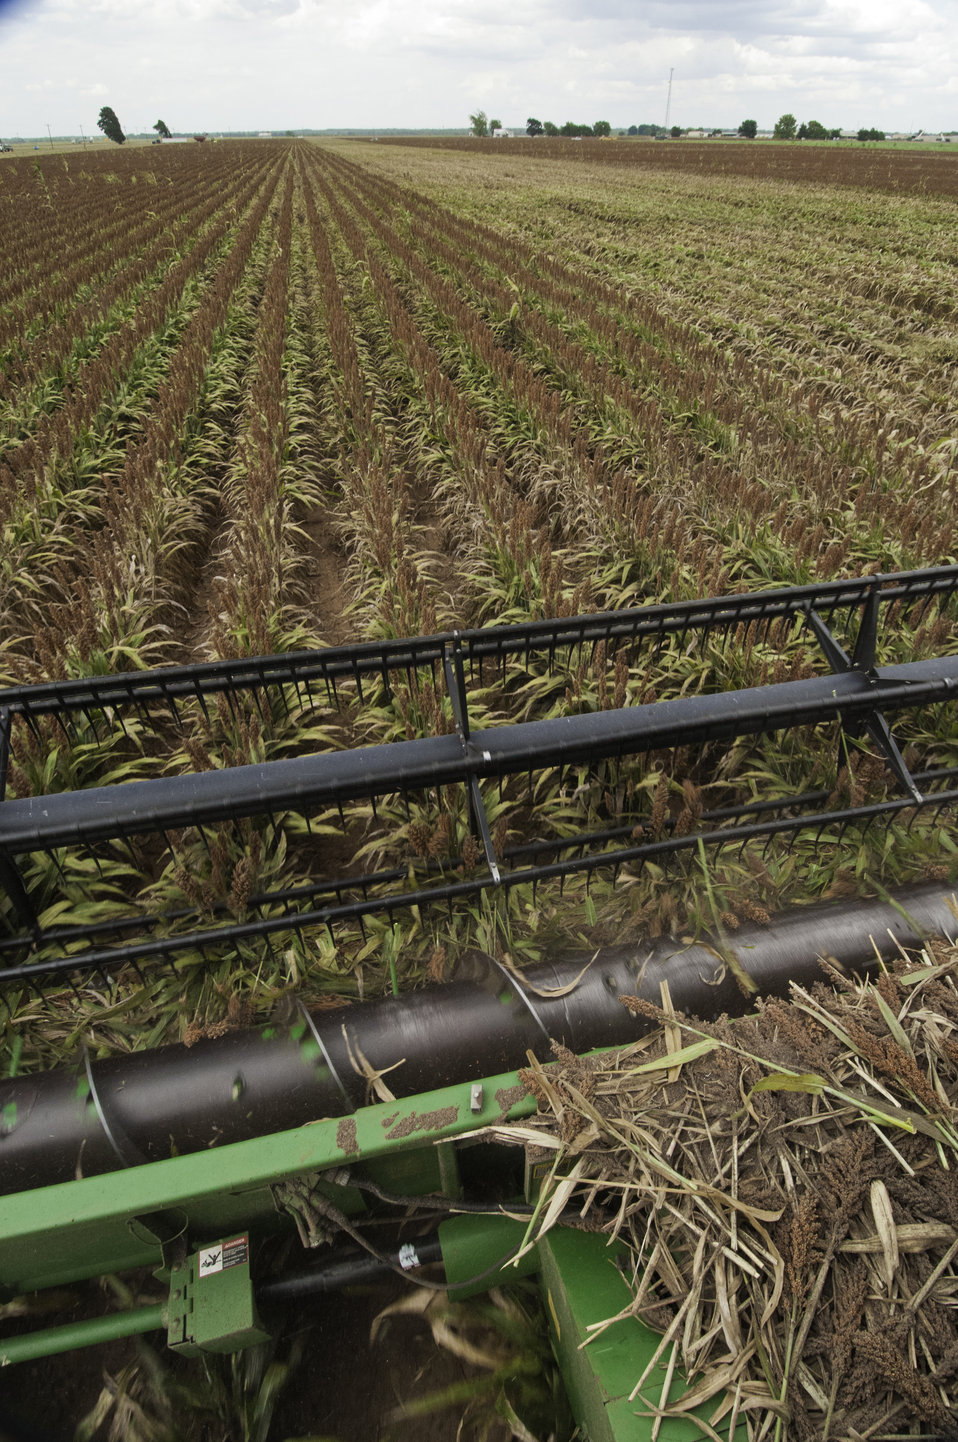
Grain sorghum is harvested on the Wilder Farms in Navasota, TX on Aug. 23, 2013.